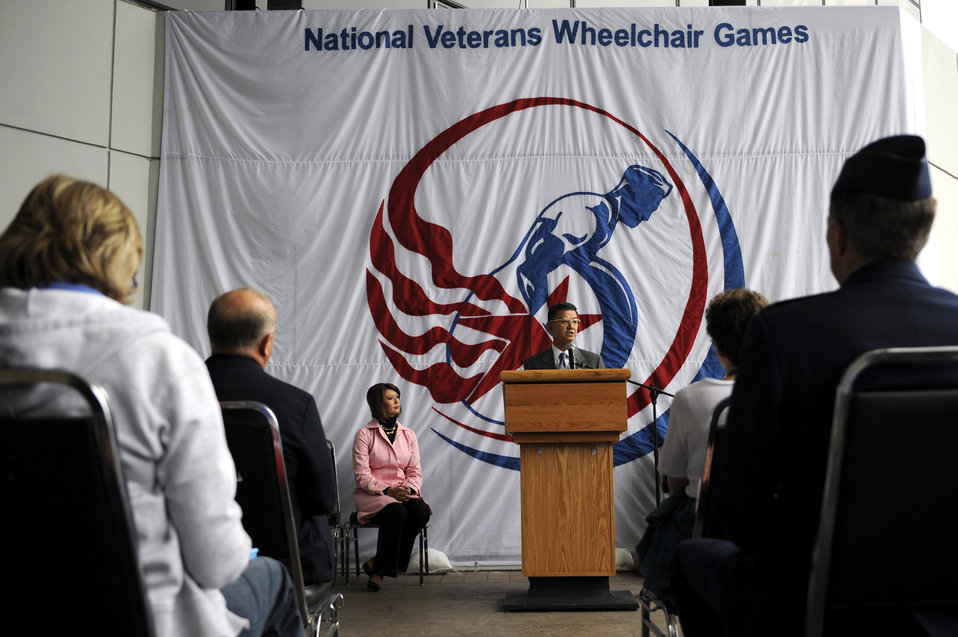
Veterans wheelchair games kick off

Secretary of Veterans Affairs Eric K. Shinseki gave opening remarks during the opening ceremony July 13 for the 29th National Veterans Wheelchair Games held in Spokane, Wa . More than 500 veterans meet at the convention center to take part in the 2009 National Veterans Wheelchair Games July 13 through 19.